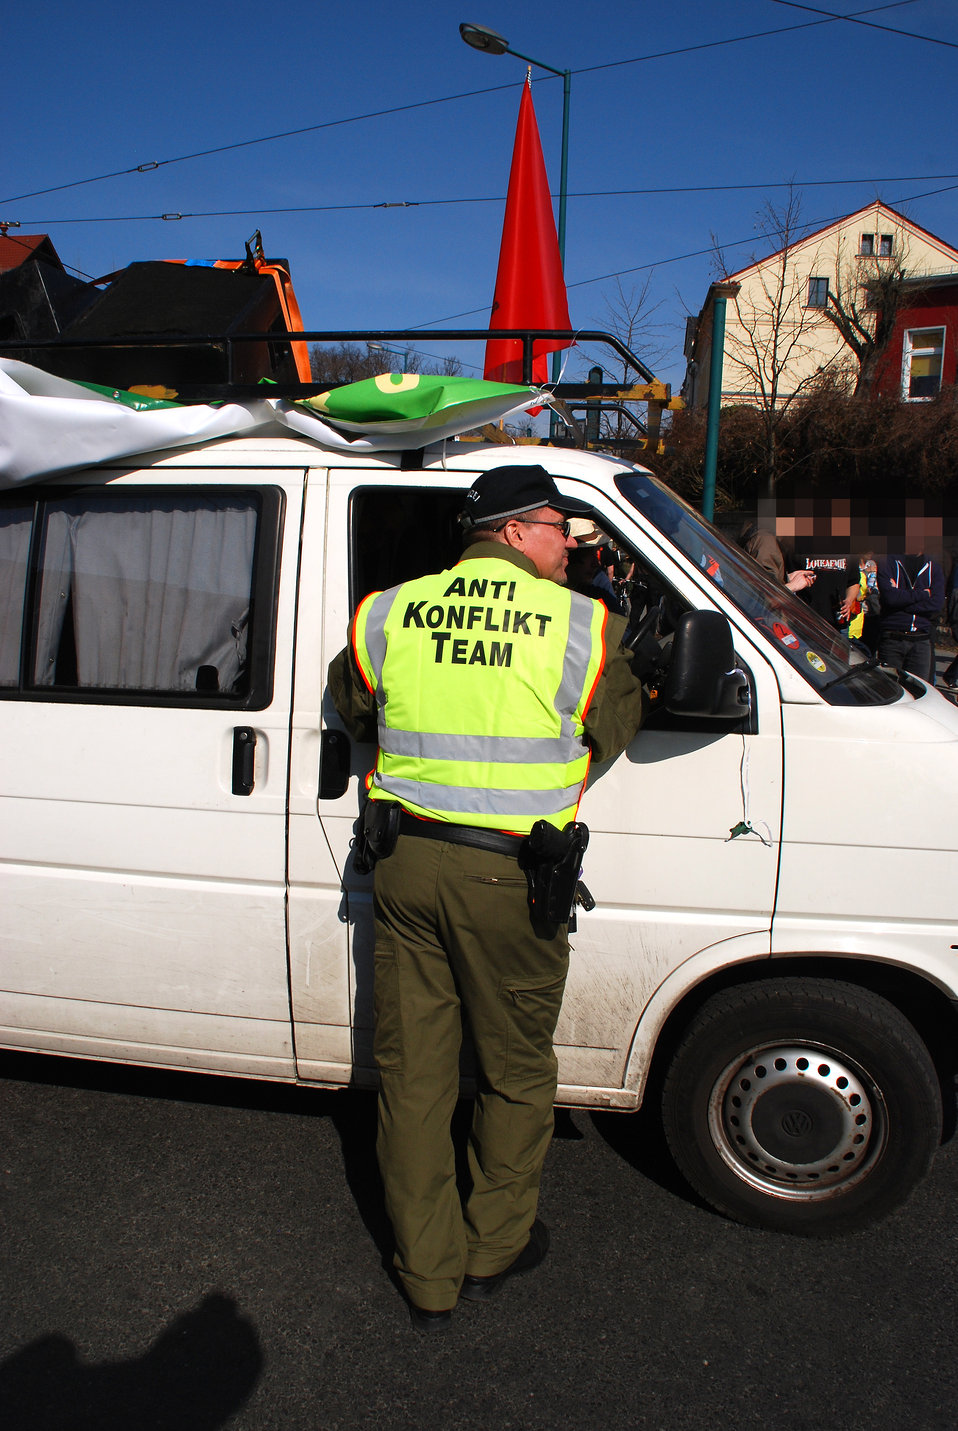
Proteste gegen den Nazi-Aufmarsch am 24.3.2012 in Frankfurt (Oder)